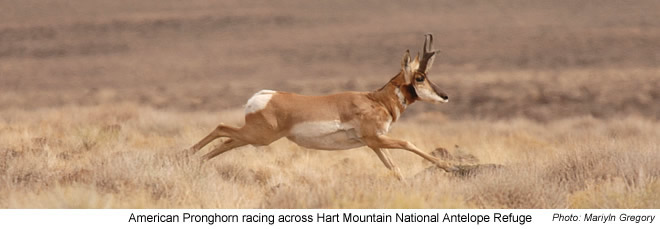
American Pronghorn - Hart MT National Antelope Refuge

The Refuge was created in 1936 as a range for remnant herds of pronghorn antelope.